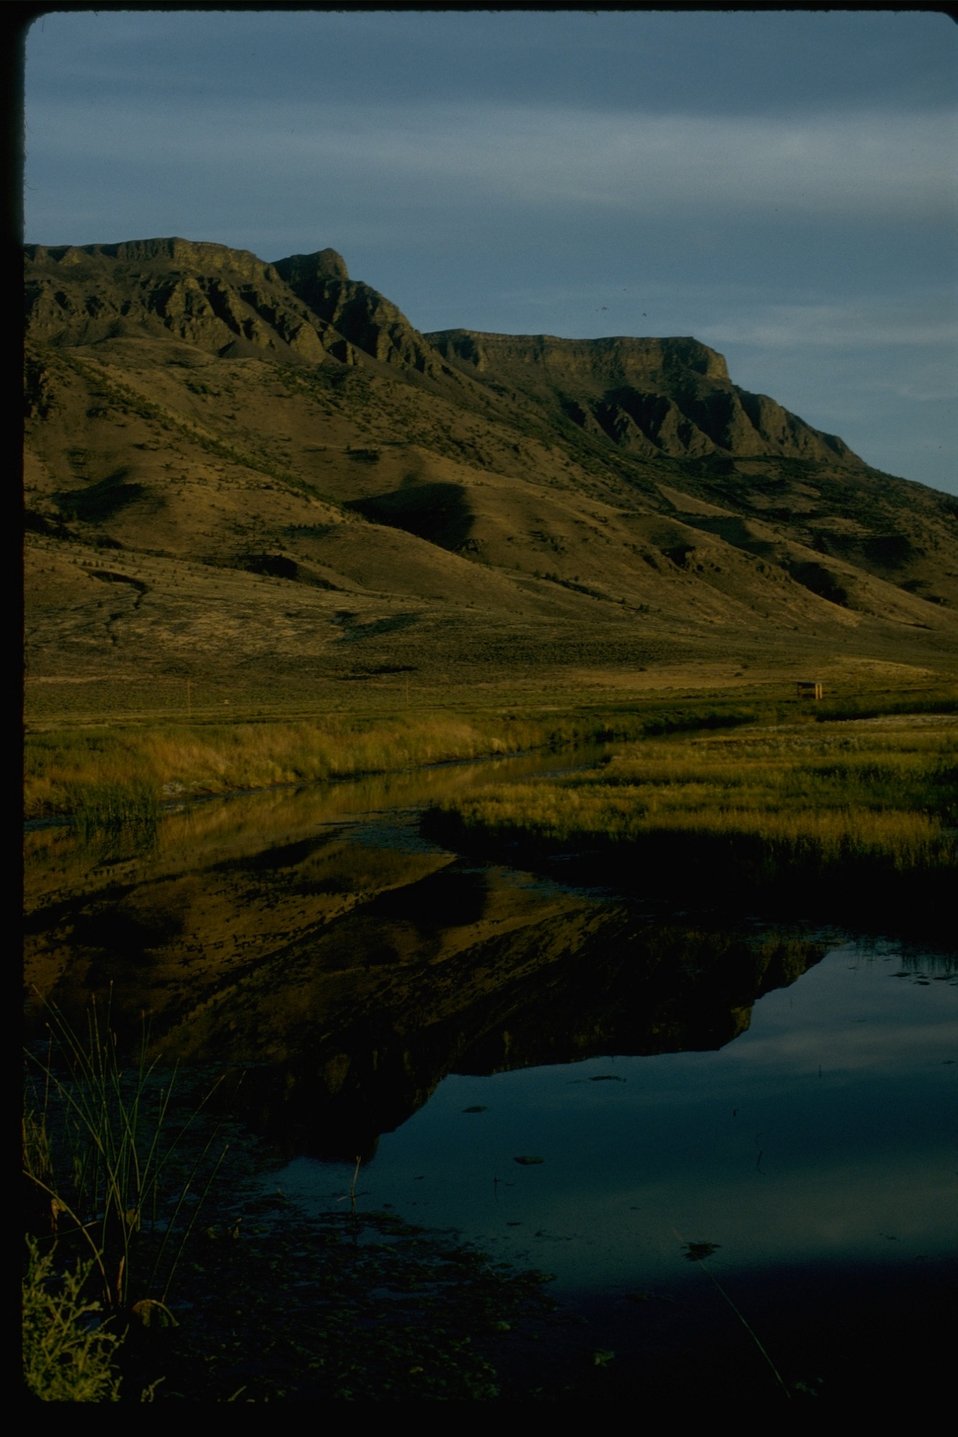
Hart Bar at Warner Wetlands.